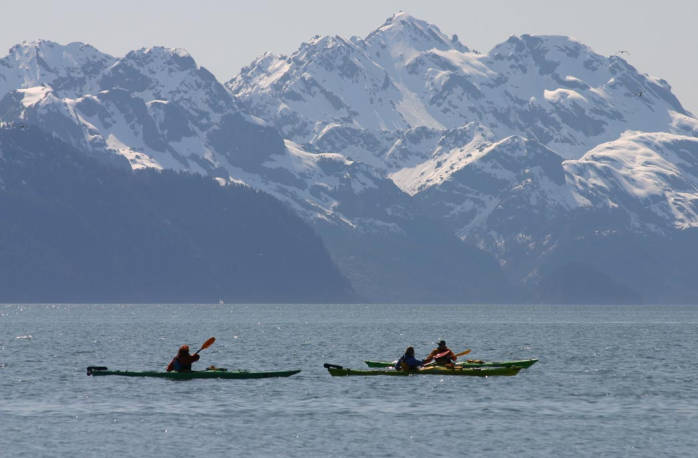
Kayaking on Resurrection Bay